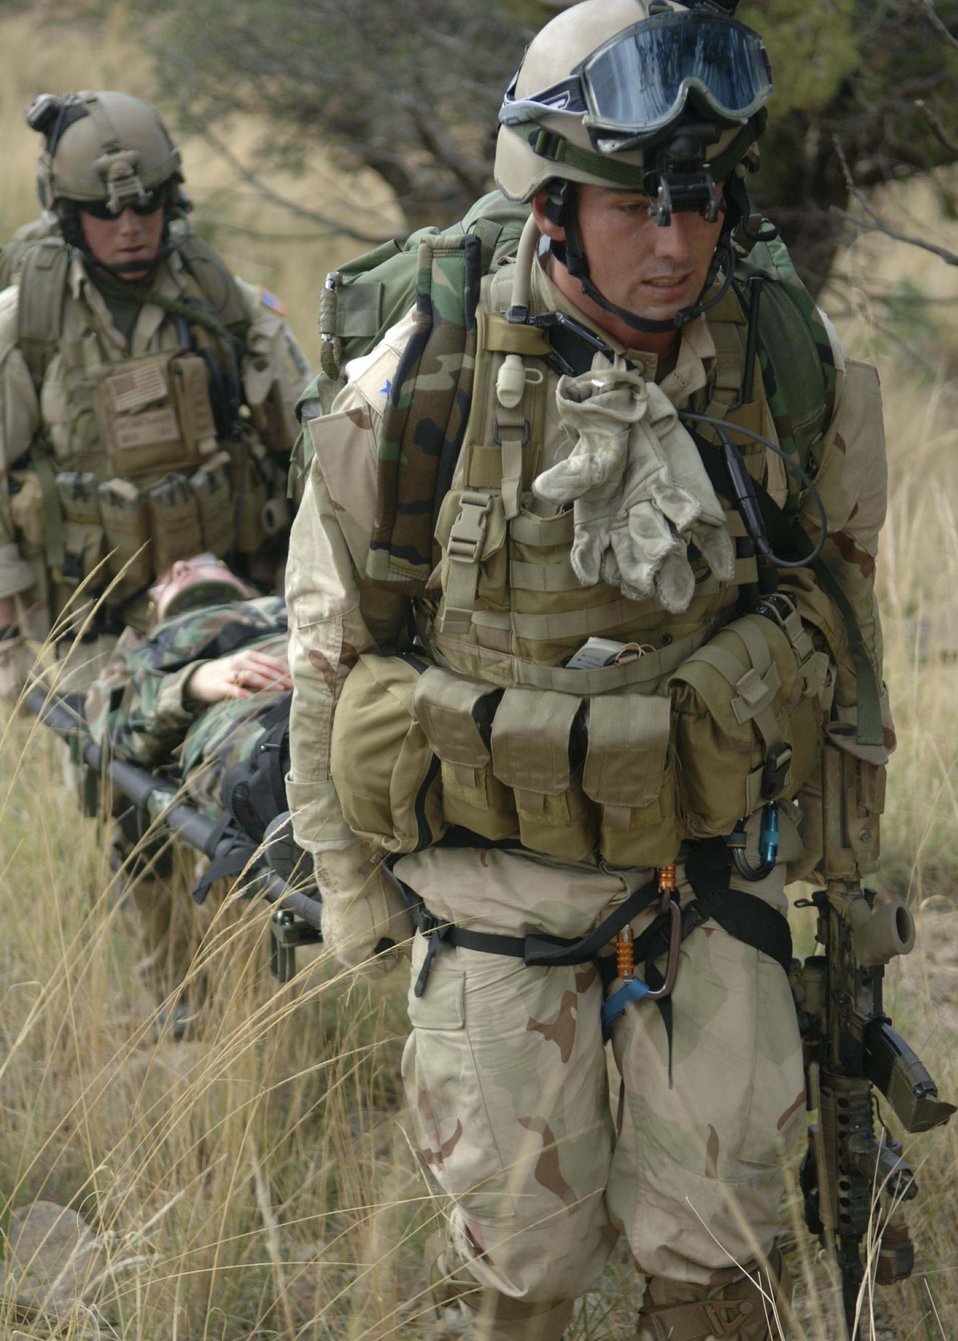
Angel Thunder

Senior Airman Corey Farr and Senior Airman Jonathan McKenzie carry a simulated mass casualty survivor to a safe location July 27 as part of exercise Angel Thunder. The mass casualty scenario involved two CH-47 Chinook helicopters crashing. Once on the ground, pararescuemen triaged survivors and relocated them to a casualty collection point. They were then flown to Davis-Monthan Air Force Base to a simulated level 2/3 medical facility. This part of exercise Angel Thunder involved the 48th, 58th, 66th, 79th and 305th Rescue Squadrons as well as air support from the 358th Fighter Squadron. Airman Farr and Airman McKenzie are with the 58th Rescue Squadron.